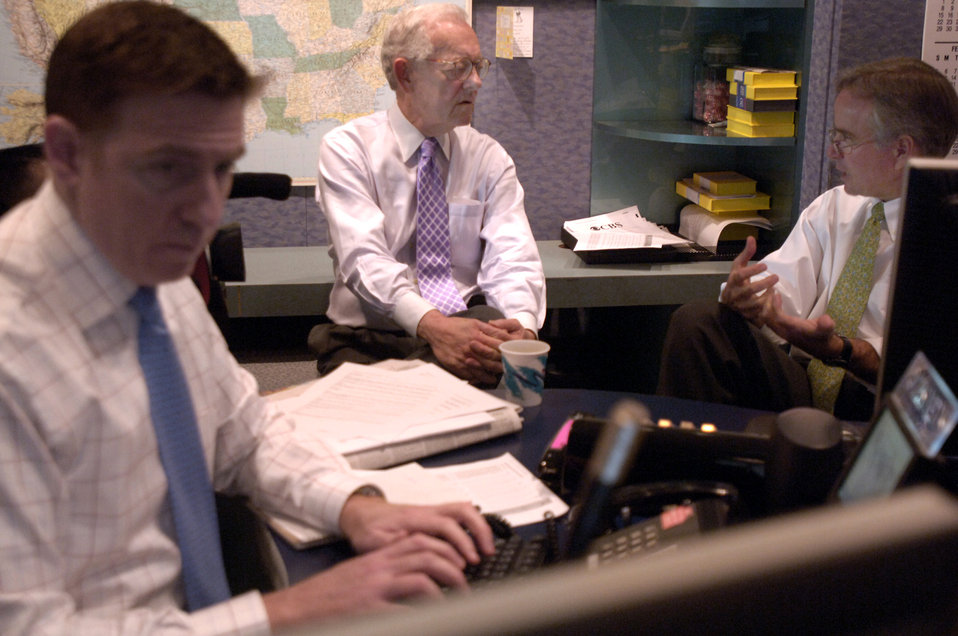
CBS news anchor proud of Air Force past

Bob Schieffer, chief Washington correspondent for